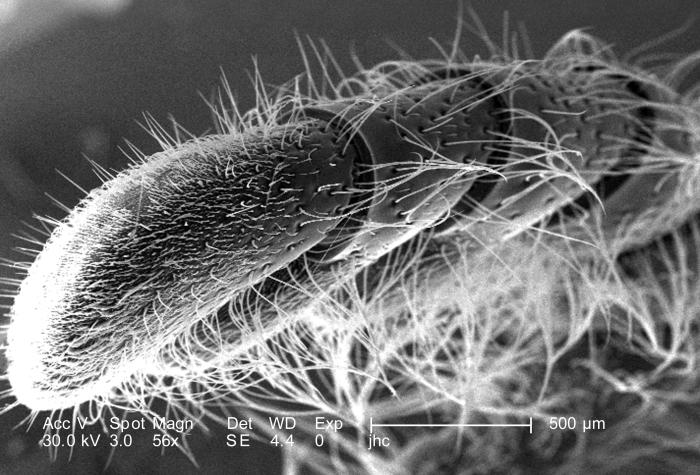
Under a low magnification of 56X, this scanning electron micrograph (SEM) depicted some of the exoskeletal morphologic characteristics displayed on the head region of an unidentified beetle found deceased in the suburbs of Decatur, Georgia. In this particular view, the distal segments of the insect's left antenna were highlighted. The antennae are composed of a proximal 'scape', a single 'pedicle', and the distal, multisegmented 'flagellum'.The scape attaches the sensory organ to the head region, and the pedicle joins the distal, jointed, flagellum to the scape. In many species of beetles, depending upon its morphology, the flagellum is further subdivided into a club, composed of the fused apical 'flagellomeres', which is what is displayed here, and the 'funicle', or 'funniculus', composed of the flagellomeres between the club and the scape.